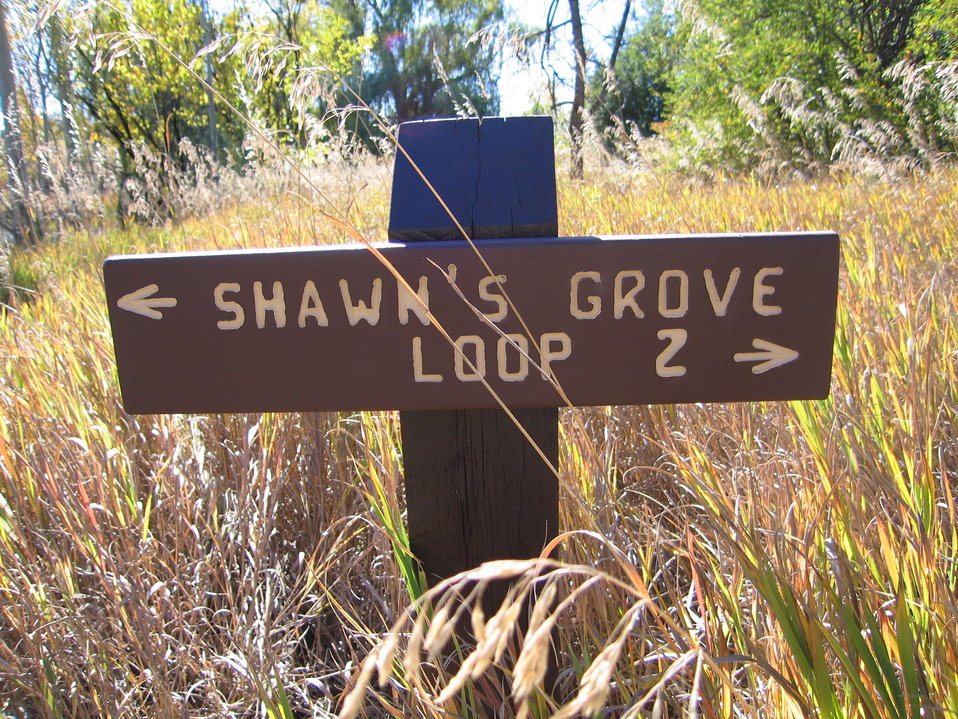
Shawn'Sign